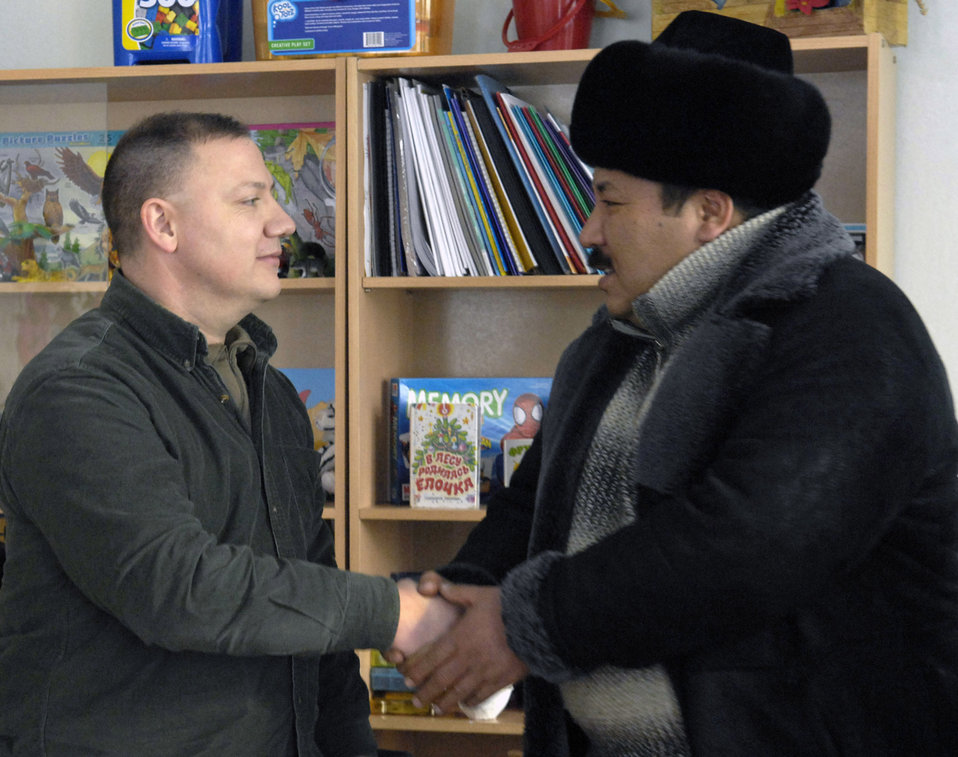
School dance

Villiage Mayor Tynchtykbek Ybykeyev thanks Senior Master Sgt. Reynold Albright for the work done by him and other volunteers over the past four months Jan. 24 at a preschool in Vasilievka, Kyrgyzstan. Sergeant Albright is the 376th Expeditionary Operations Group superintendent and volunteers from Manas Air Base, Kyrgyzstan, installed and insulated windows in the main part of the school.